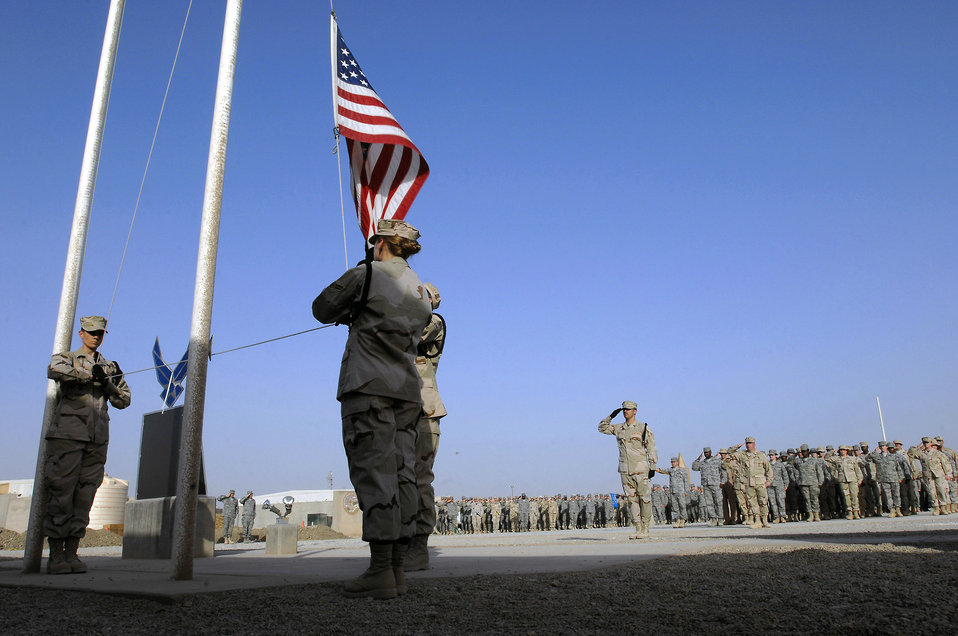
Airmen remember the price of freedom

Airmen from the 407th Air Expeditionary Group hold a retreat ceremony to remember the price of freedom March 20 at Ali Base, Iraq. Airmen form up once a week to remember all those who have lost their lives in the war on terrorism.